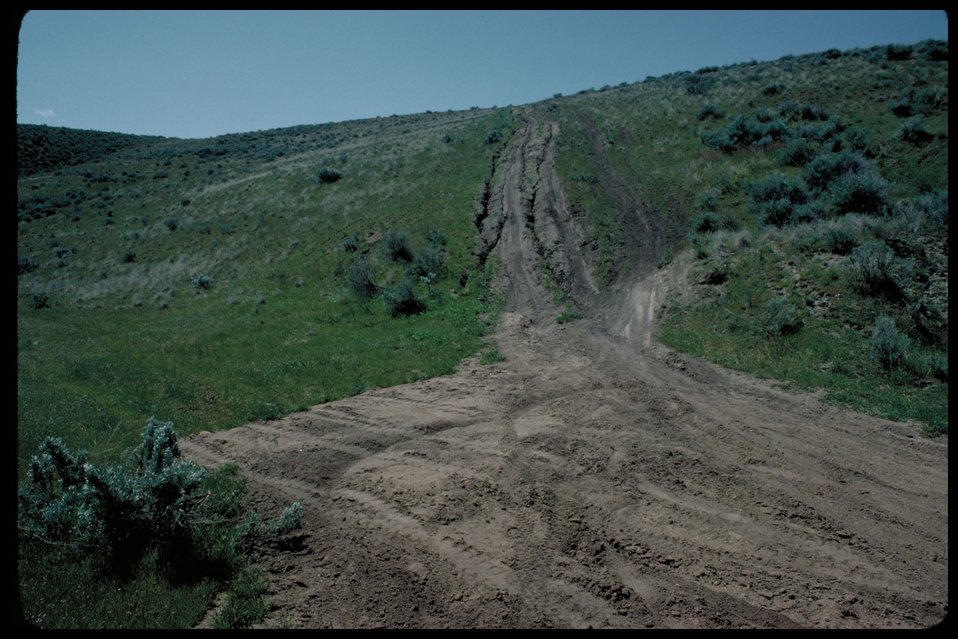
Boise Front Trail OHV Off Highway Vehicles Four Rivers Field Office LSRD Lower Snake River District